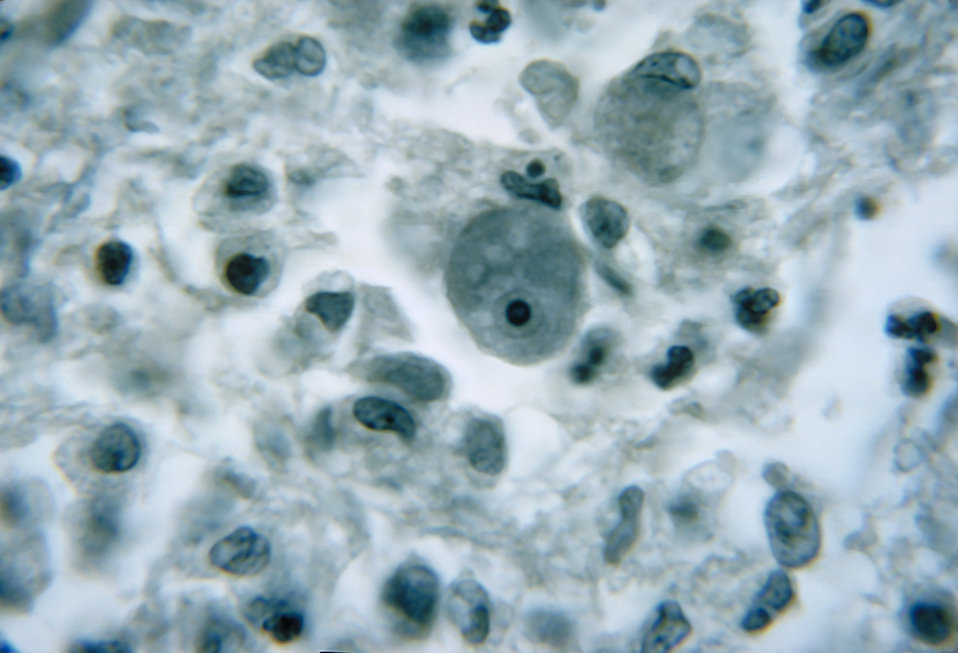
This photomicrograph of a brain tissue specimen depicts the cytoarchitectural changes associated with a free-living amebic infection, which may have been caused by either a Naegleria fowleri, or an Acanthamoeba sp. The organisms were found in the brain of a Japanese Prisoner of war in the 1950's, before we knew about the free living amebae, and how they attack the brain. When free-living amebae infect the brain or spinal cord, the condition is known as primary amebic meningoenceohalitis, or PAM. Free-living amebae belonging to the genera Acanthamoeba, Balamuthia, and Naegleria are important causes of disease in humans and animals, though only one specie of Naegleria, Naegleria fowleri, causes disease in humans.